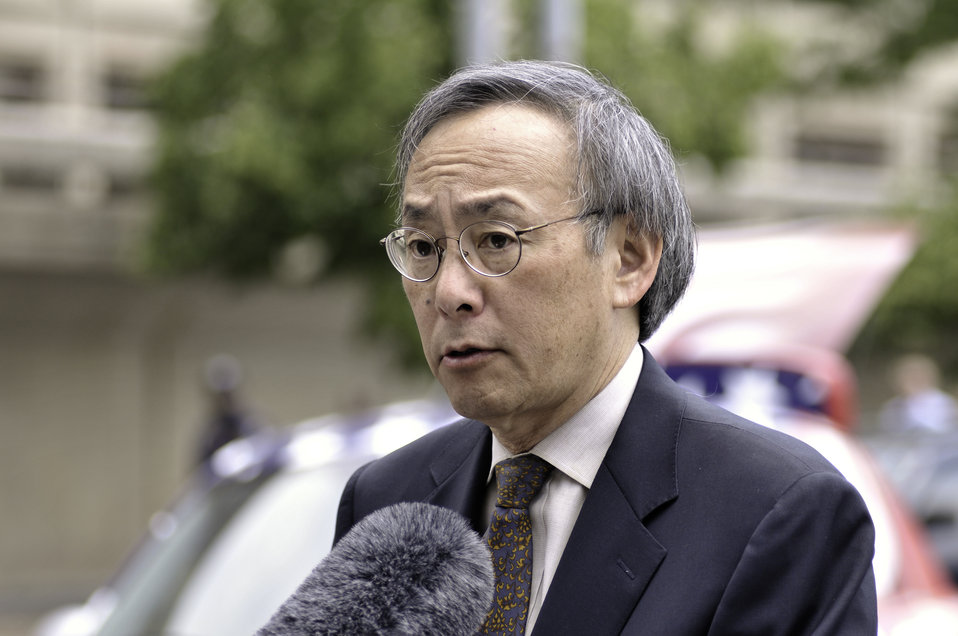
Clean Fleets Announcement 5 of 14

Sec. Steven Chu, US Department of Energy speaks at a Clean Fleets event held at the Department of Energy.